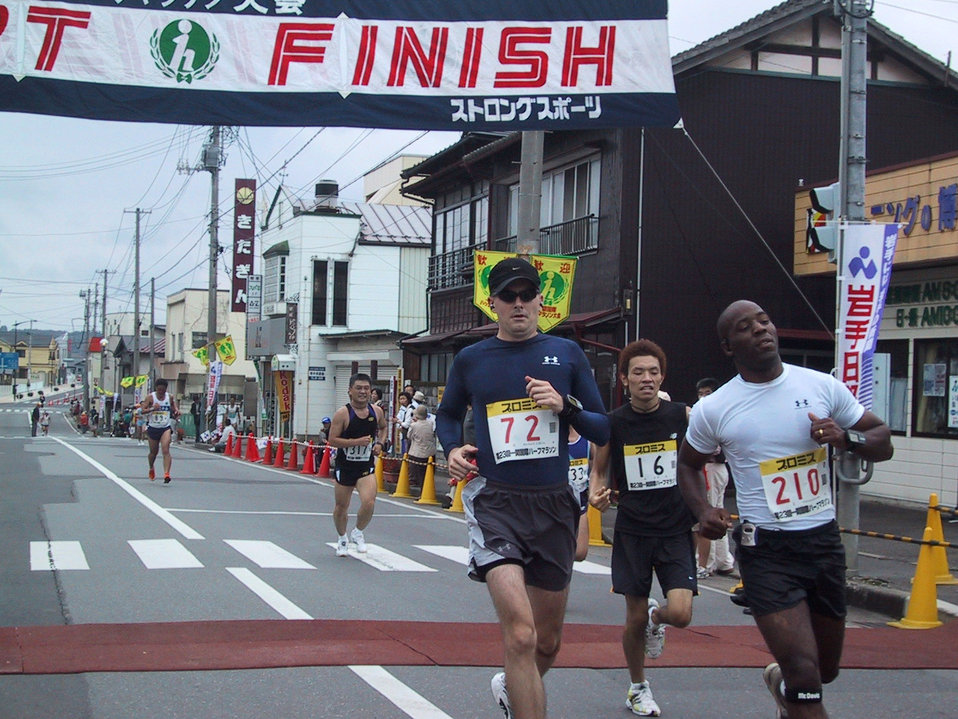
Weather officer to compete in Antarctic marathon

Maj. Michael Mills (72) runs in the Ichinoseki Half Marathon in September 2004 with Lt. Col. Clarence Lukes (210) in Ichinoseki, Japan. Major Mills is assigned to the Headquarters Air Force Weather Plans and Requirement Division and is training for the Antarctica Marathon.